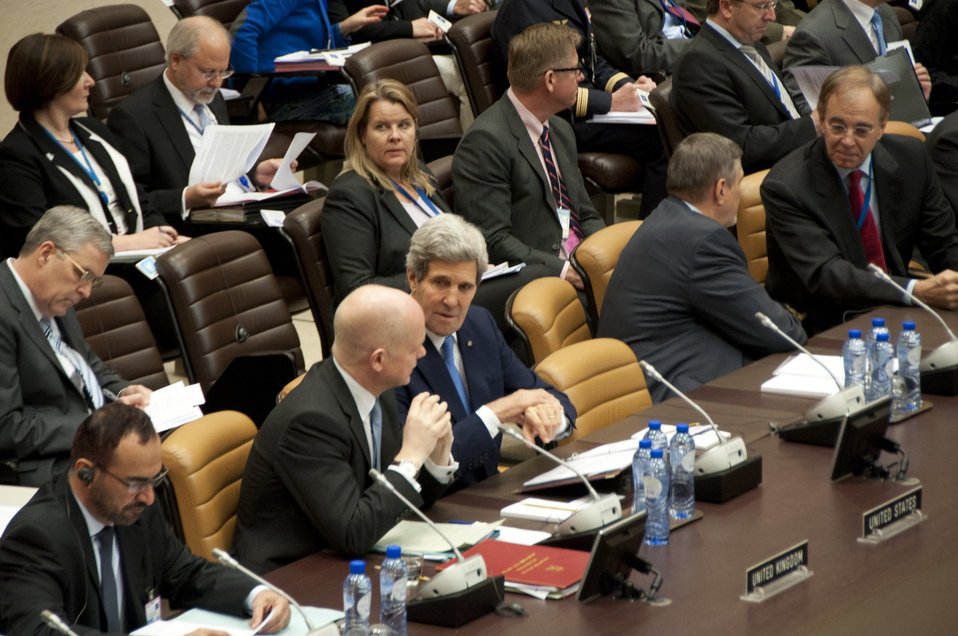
Secretary Kerry Chats With British Foreign Minister Hague

U.S. Secretary of State John Kerry chats with British Foreign Secretary William Hague before a meeting to discuss the current and future security situation in Afghanistan at NATO Headquarters in Brussels, Belgium, on December 4, 2013.